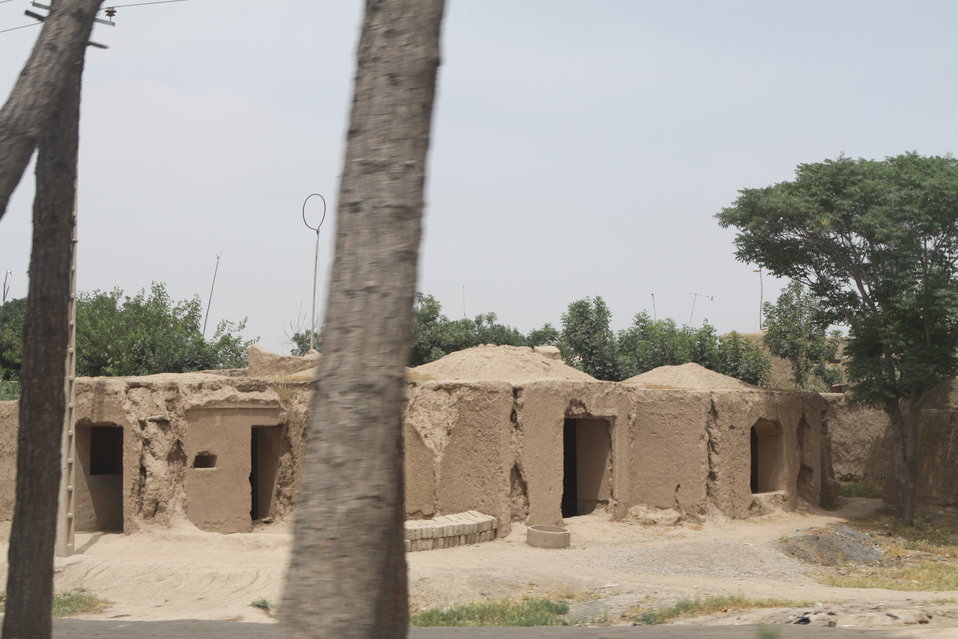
100525 Hirat Marble Conference 570